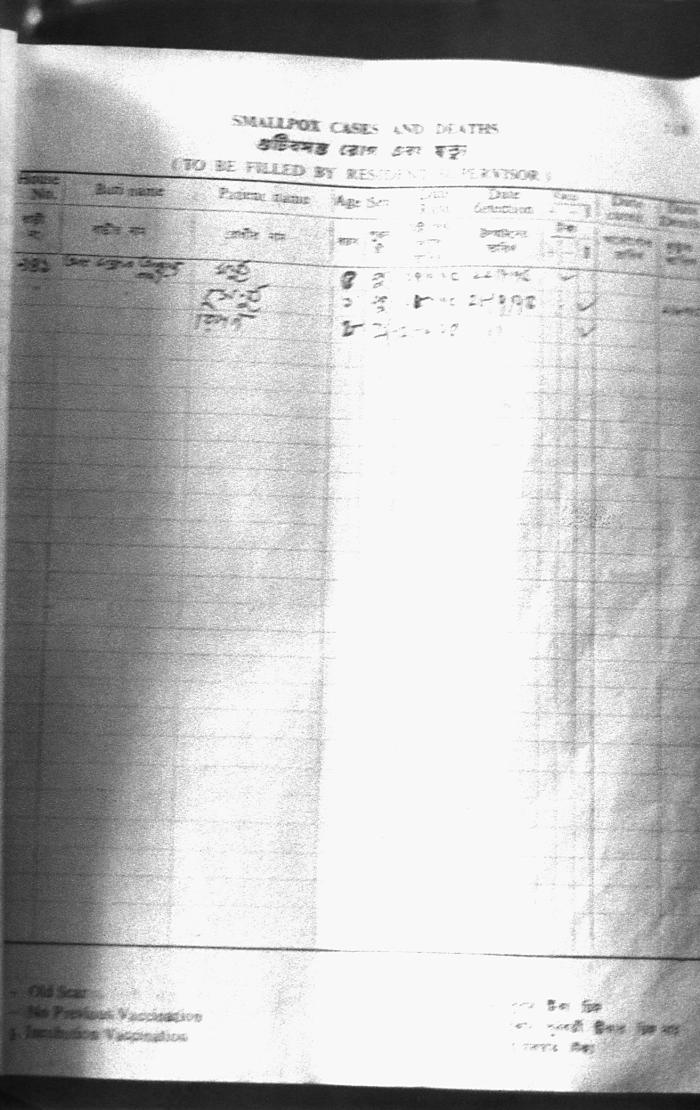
Yet another data-collecting tool was the 'Case and Death Register', which contained the names of those individuals who'd been diagnosed with a case of smallpox, and did not survive its onslaught. There are two clinical forms of smallpox, Variola major and Variola minor. Variola major is the severe and most common form of smallpox, with a more extensive rash and higher fever.Epidemiologic data collection was integral to successfully conquoring this dreaded viral infection. Tools such as the Containment Book, the Cross-Registry, and the book pictured here, the Case and Death Register, along with accompanying geographic maps of communities and regions, were all used by the members of the smallpox eradication team to trace, track, and monitor the progress of their diligent efforts.